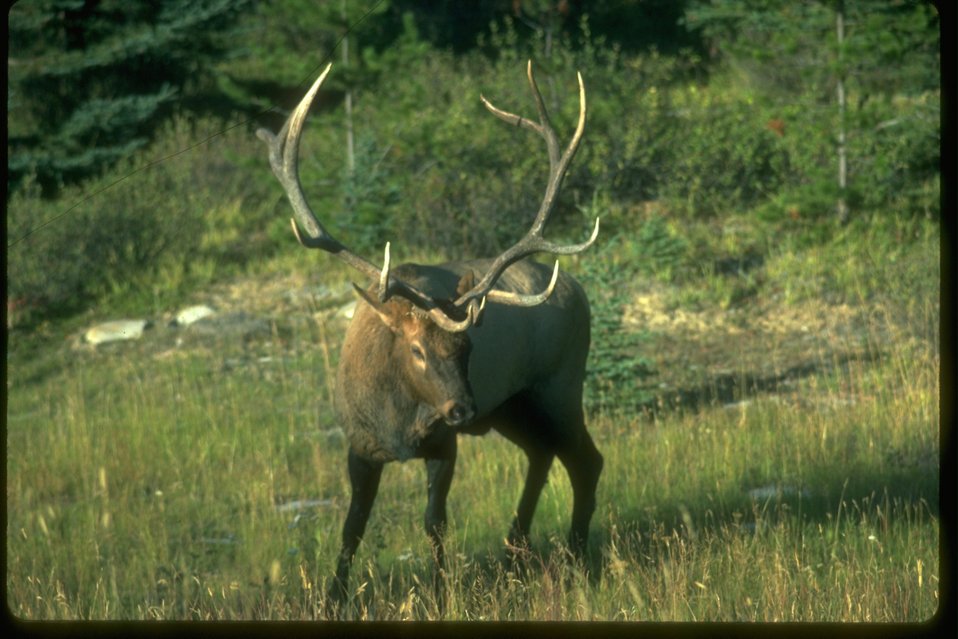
An Elk in Canada.